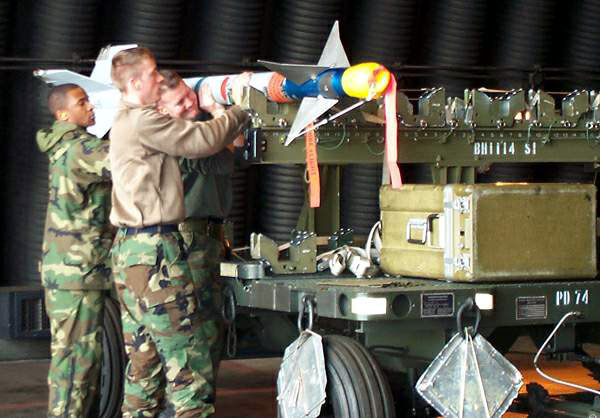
Job Well Done

ROYAL AIR FORCE STATION LAKENHEATH, England --Staff Sgt. Roderick Buck and Airmen 1st Class Bobby Jameson and Juan Cosby, all munitions specialists from the 48th Fighter Wing's, 493rd Fighter Squadron at here, load an AIM-9 air-to-air missile. The